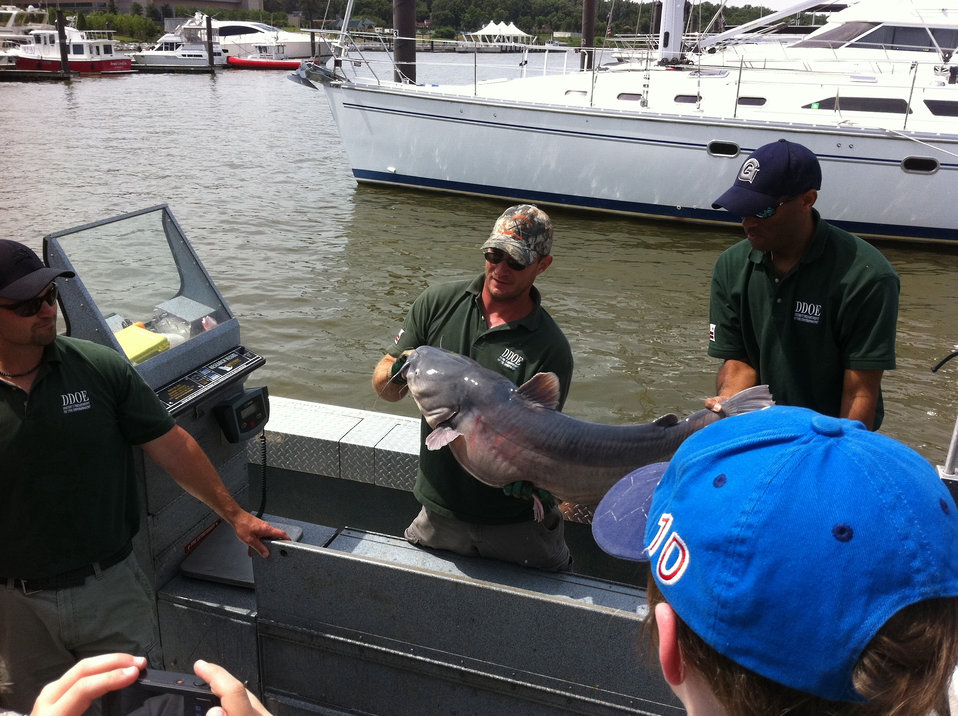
An invasive blue catfish. Look how big it is!